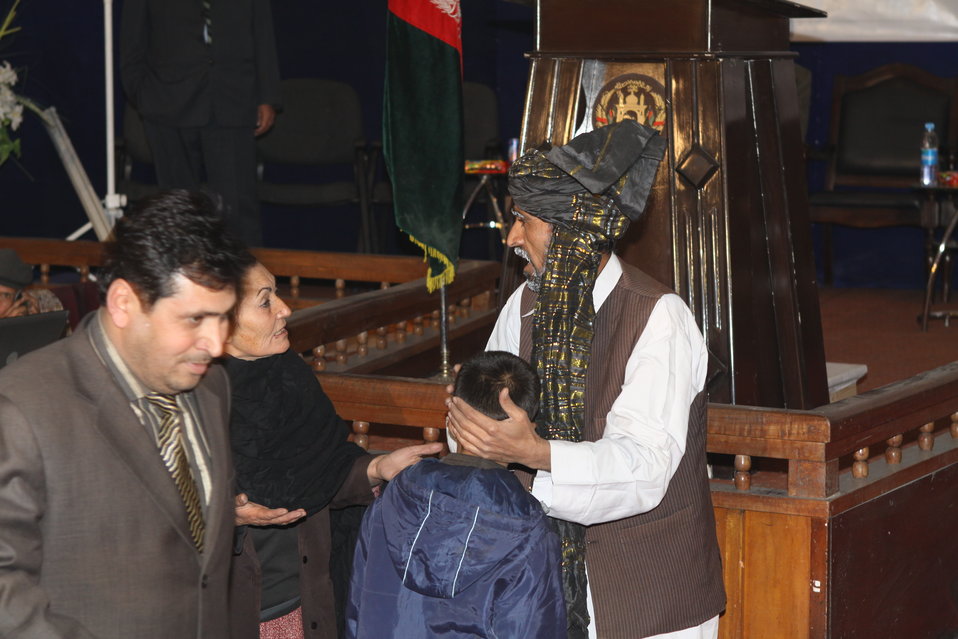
Community Health Workers Celebrated

Kabul, Afghanistan | December 5, 2010 — In support of the United Nations designated International Volunteer Day for Economic and Social Development, Afghanistan’s Ministry of Public Health celebrated its annual Community Health Worker Day today. Acting Minister of Public Health Dr. Suraya Dalil, USAID Senior Deputy Mission Director Robert Hellyer, other government officials, and international donors joined in recognizing the critical contribution of community health workers in Afghanistan and encouraging them to continue their voluntary support to their communities.
The event praised the contributions of the more than 22,000 volunteers throughout the country who deliver community level health-education, counseling, and services out of village health posts located in private homes. The Ministry of Public Health envisioned that community-based healthcare programs will actively encourage communities and families to adopt healthy lifestyles and behaviors, and provide families access to high quality and socially acceptable preventative medicine and life-saving services.
“We have 22,000 community health workers in Afghanistan that are able to implement the basic and standard medicines. They all have been trained through a job description,” said Minister Dalil. Addressing the health workers, she added, “I am proud and feel powerful that I have people like you.”
USAID-funded health projects collaborate closely with the Ministry of Public Health to improve the health and nutritional status of Afghans, provide quality primary healthcare, and promote healthy behaviors at the community and household-levels. USAID supported the training of more than 9,000 of the volunteer community health workers currently working in Afghanistan.
“On behalf of the American people, I congratulate the Community Health Workers for their diligence to gain the skills and knowledge necessary to serve their communities in this important role,” said USAID Senior Deputy Mission Director Hellyer. “USAID strongly supports community based health care and believes that quality community-based health services are essential to reaching Afghanistan’s Millennium Development Goals.”
To support the Basic Package of Health Services, USAID assisted in developing the community health worker training manual, helped train community health worker supervisors and master-trainers, facilitated in-service training, and produced and developed reporting tools, job aids, and education materials.